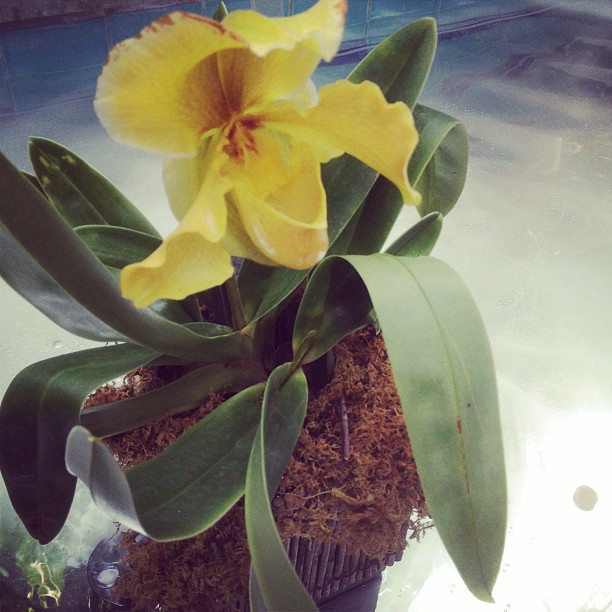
Peter Black orchid at the U.S. Botanic Garden.